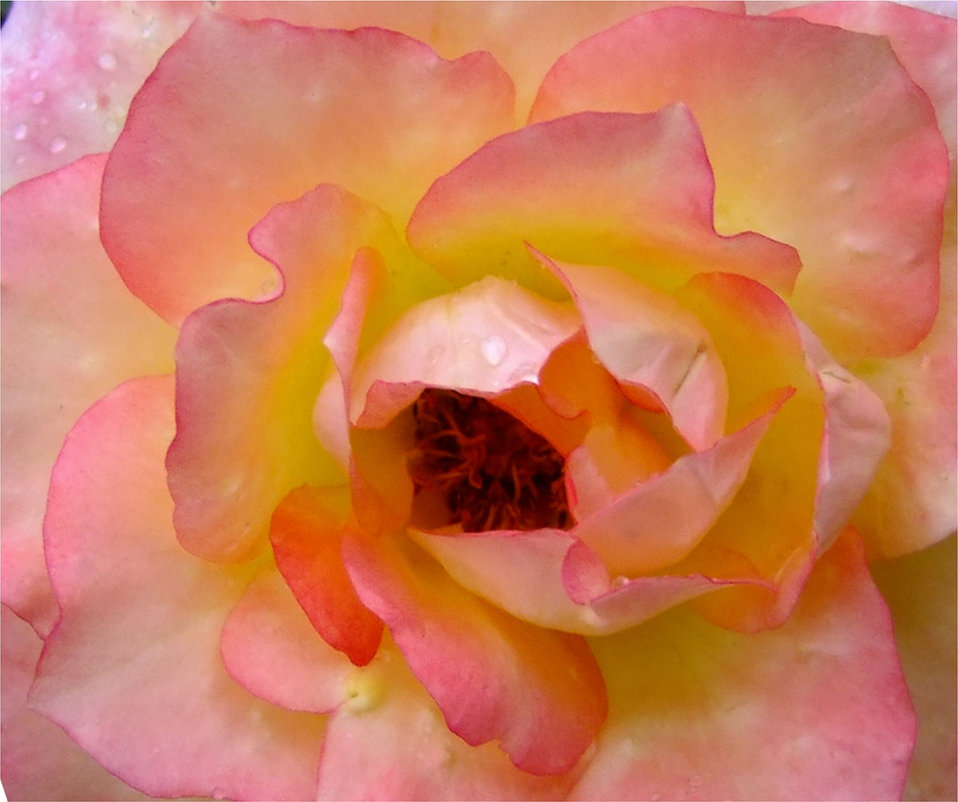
Rose

Fresh rose opened after rains.